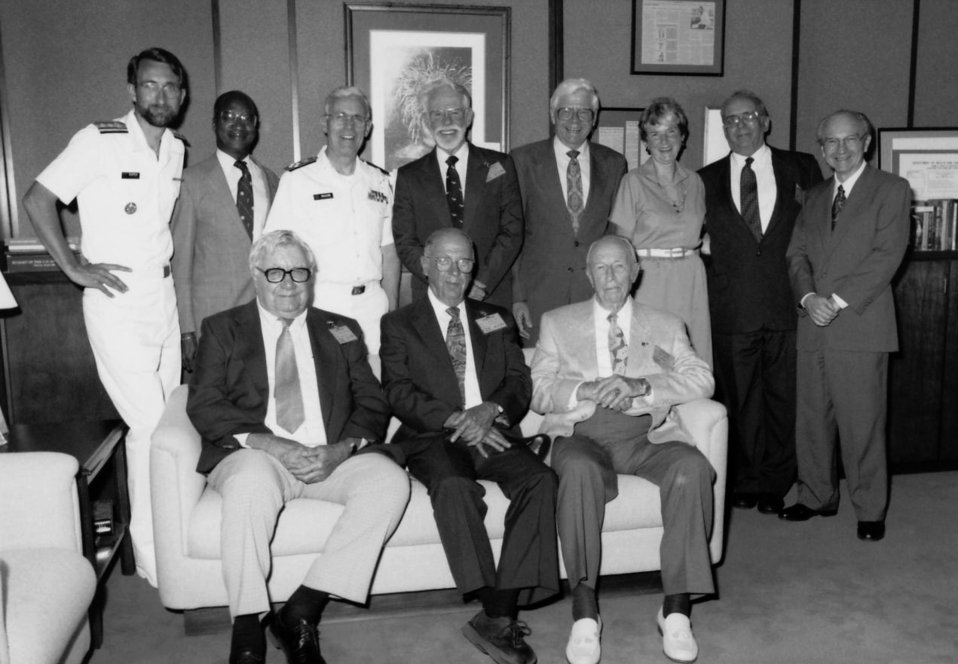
This photograph showed some of the Centers for Disease Control and Prevention's past directors who had attended a 1992 gathering that celebrated the organization's 46th anniversary.